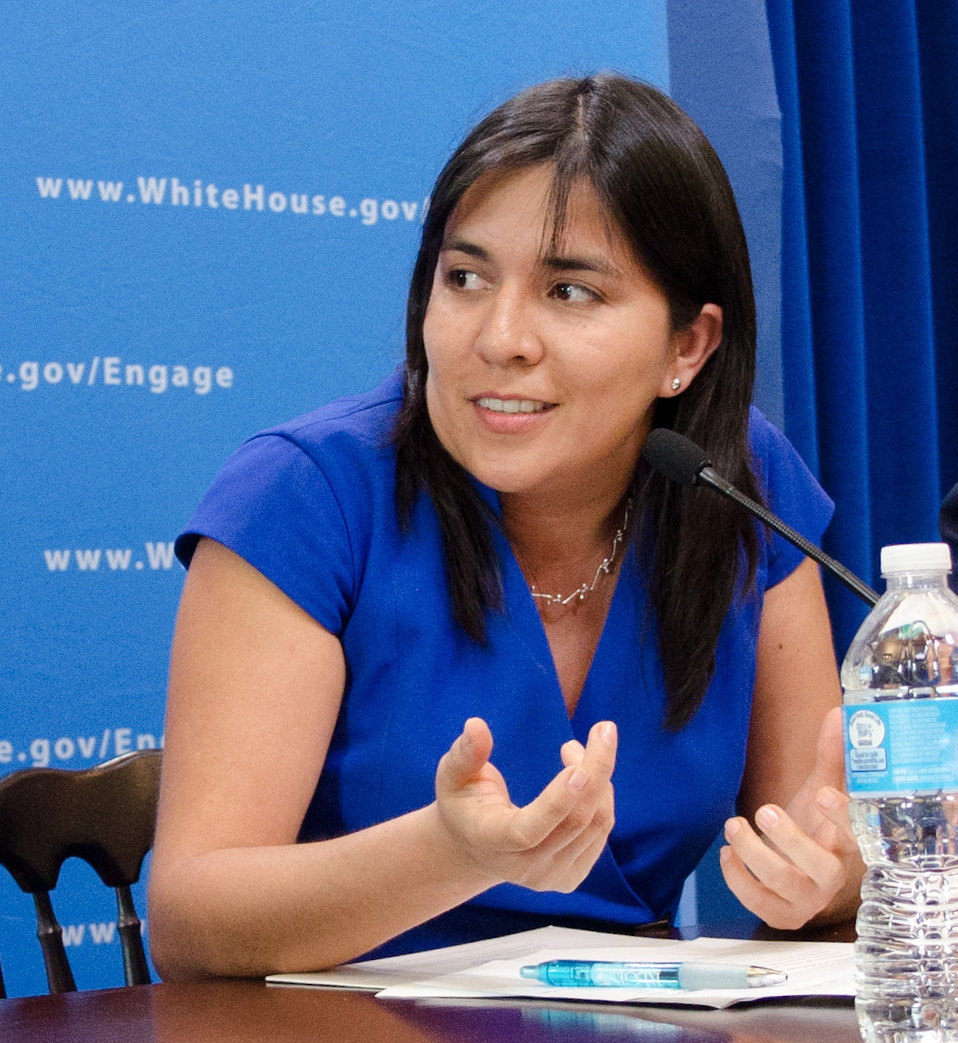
Catholic Medical Mission Board Project Director Dr. Claudia Llanten talked about food sources situations in Peru, during an event her work and ten other honorees recognized for her efforts to reduce hunger and increase food security in the U.S. and internationally at the White House Champions of Change Strengthening Food Security at Home and Abroad Event held at the White House on Thursday, September 6, 2012, in Washington, D.C.